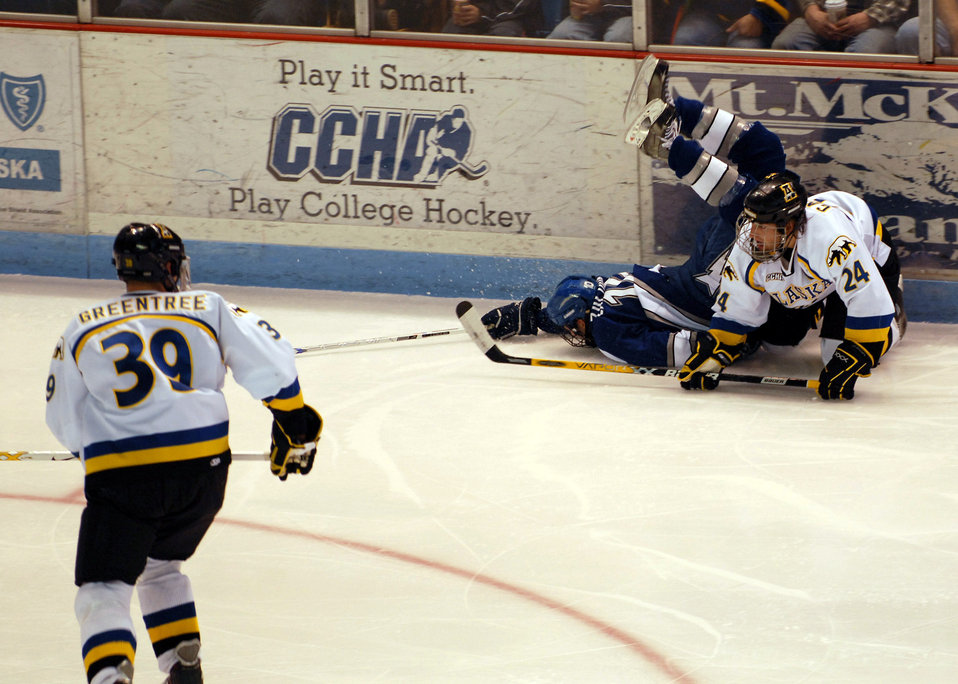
Falcons face tough ice foe

T.J. Campbell of the University of Alaska-Fairbanks Nanooks trips Cadet 1st Class Theo Zacour of the U.S. Air Force Academy Falcons during a match at the Carlson Center in downtown Fairbanks on Oct. 14. The Nanooks went on to win the game 8 to 4. The Falcons fell to 1-3 for the season.